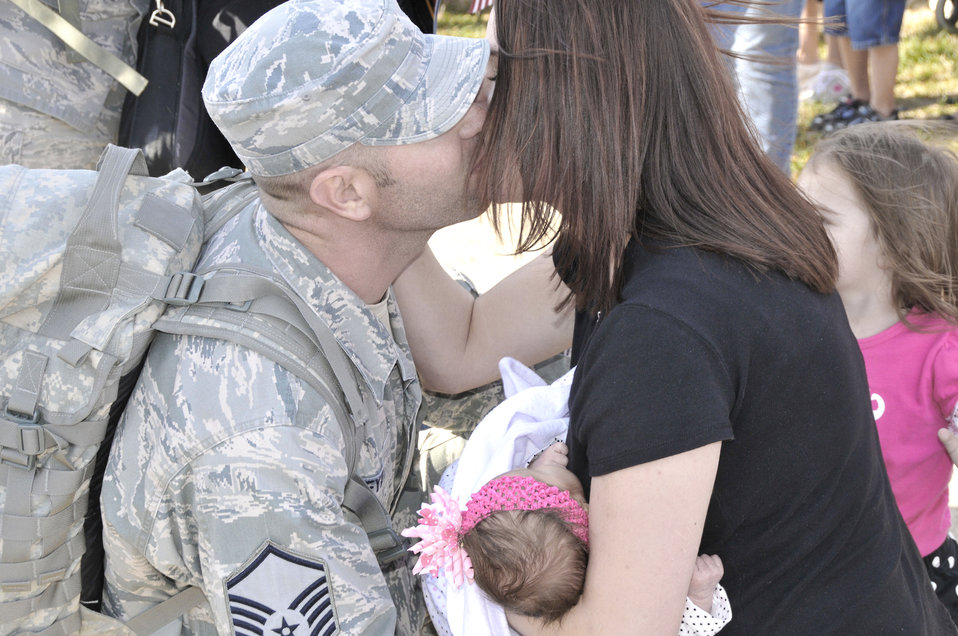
Guardsmen come home

Tech. Sgt. Brian Chesshir embraces his boys Nov 10, 2010, at Hulman Field Air National Guard Base, Ind., after returning from his seven-month deployment overseas. Sergeant Chesshir is assigned to the Indiana Air National Guard's 181st Security Forces Squadron.